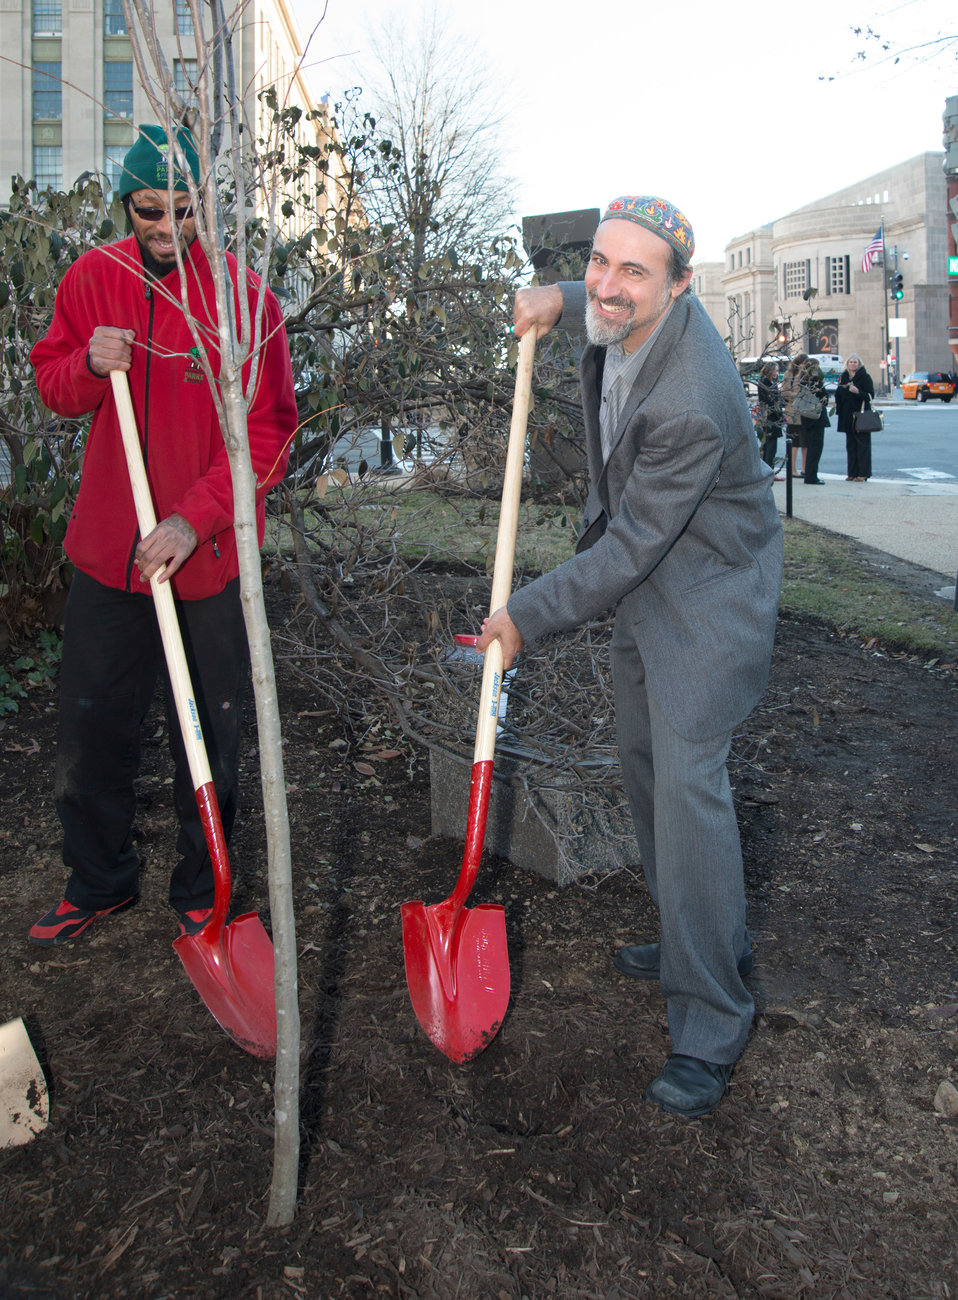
Adat Shalom Reconstructionist Synagogue Rabbi Fred Scherlinder Dobbhelps plant a a Redbud tree on the west lawn of the U.S. Department of Agriculture (USDA) to commemorate Tu B’Shevat, the Jewish New Year of the Tree, on Thursday, Jan. 16, 2014.